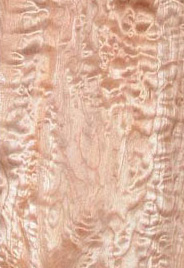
A.macrophyllum-wood